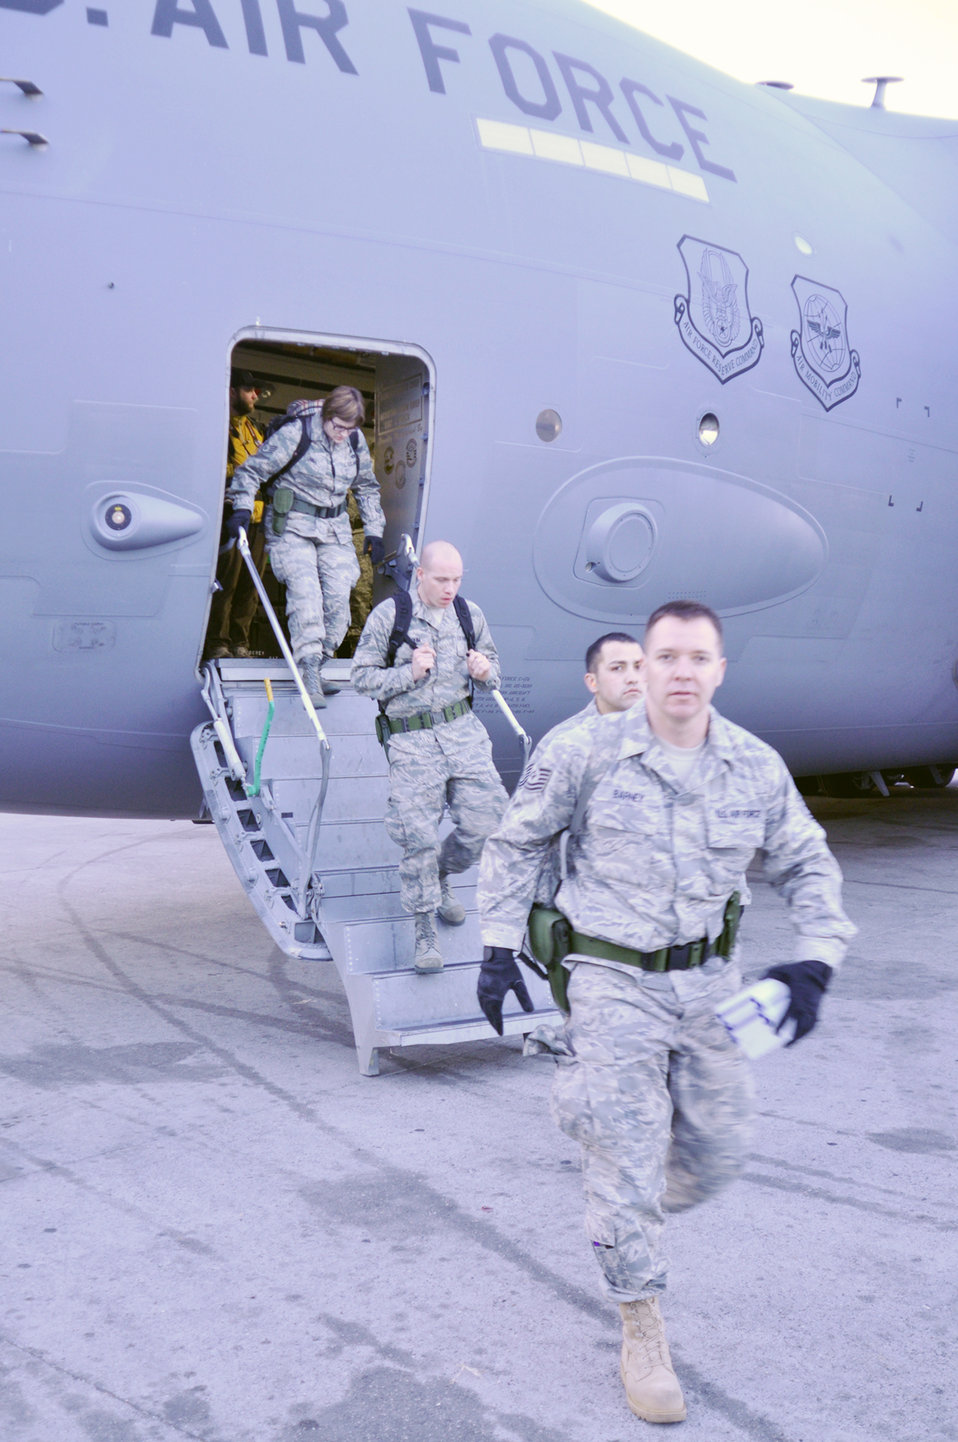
Hill Airmen offer help, hope to Haiti

Airmen step off a C-17 Globemaster III Jan. 22, 2010, at Port-au-Prince airport, Haiti. The group will be deployed there for at least 45 days. They will load and unload cargo and passengers from aircraft going in and out of Port-au-Prince as part of the massive multinational relief effort underway there.